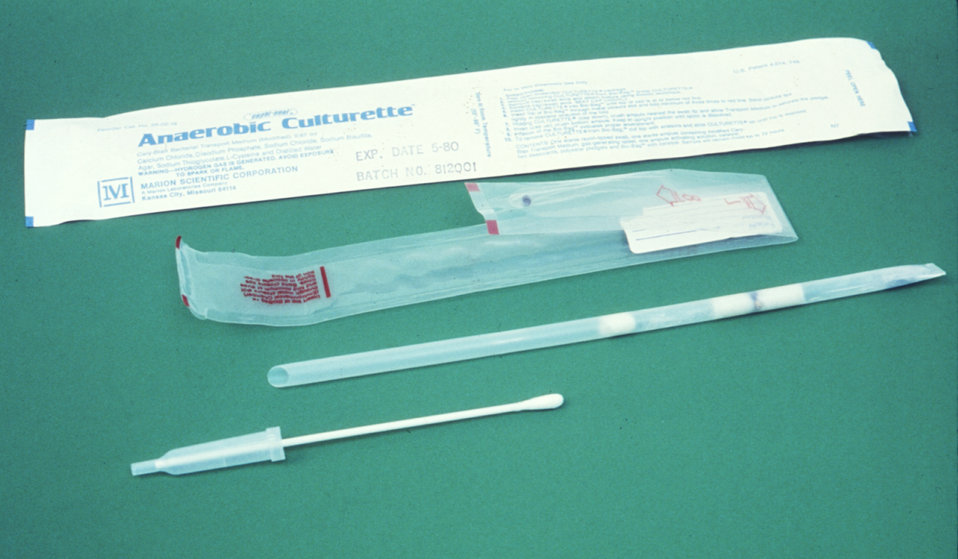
These are the contents of an Anaerobic Culturette� package made by the Marion Scientific Corporation.